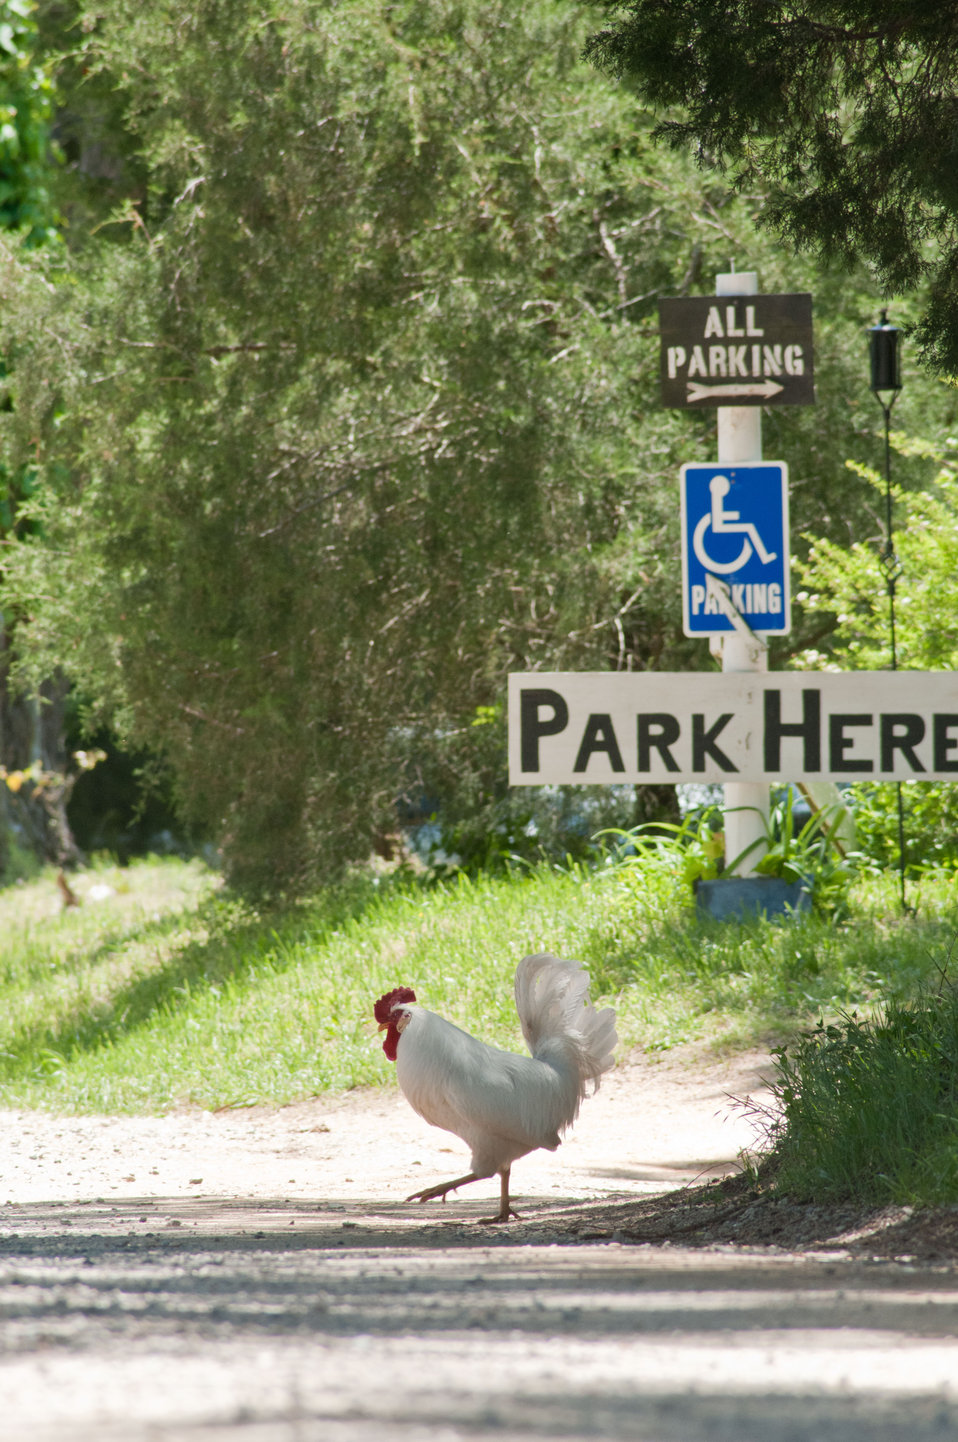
Why this rooster crossed the road is still unanswered, because they can freely walkabout the lawns and pastures at the Tuckahoe Plantation, in Goochland County, VA, on Thursday, May 5, 2011. Where chickens graze on the grass they also leave nutrient rich manure to revitalize the soil, enhancing regrowth. The plantation was the boyhood home of President Thomas Jefferson from 1745 until 1752. Today the plantation is a working farm with cattle, sheep, chickens and rabbits supplying meats to Fall Line Farms a local food hub. Fall Line Farms offers a wide variety of household food staples and specialty items on an ever changing inventory of fruits, vegetables, meats, soaps, eggs, cheeses, flowers, honey, pastas, sauces, syrups, baked goods, mushrooms, flour and grains. Suppliers post what they have on a Lulus Local Food online listing and customers make their selection. Every Thursday, suppliers team up to deliver customized orders to, one of several pick-up points, designated by the customer in or around the Richmond, VA area.